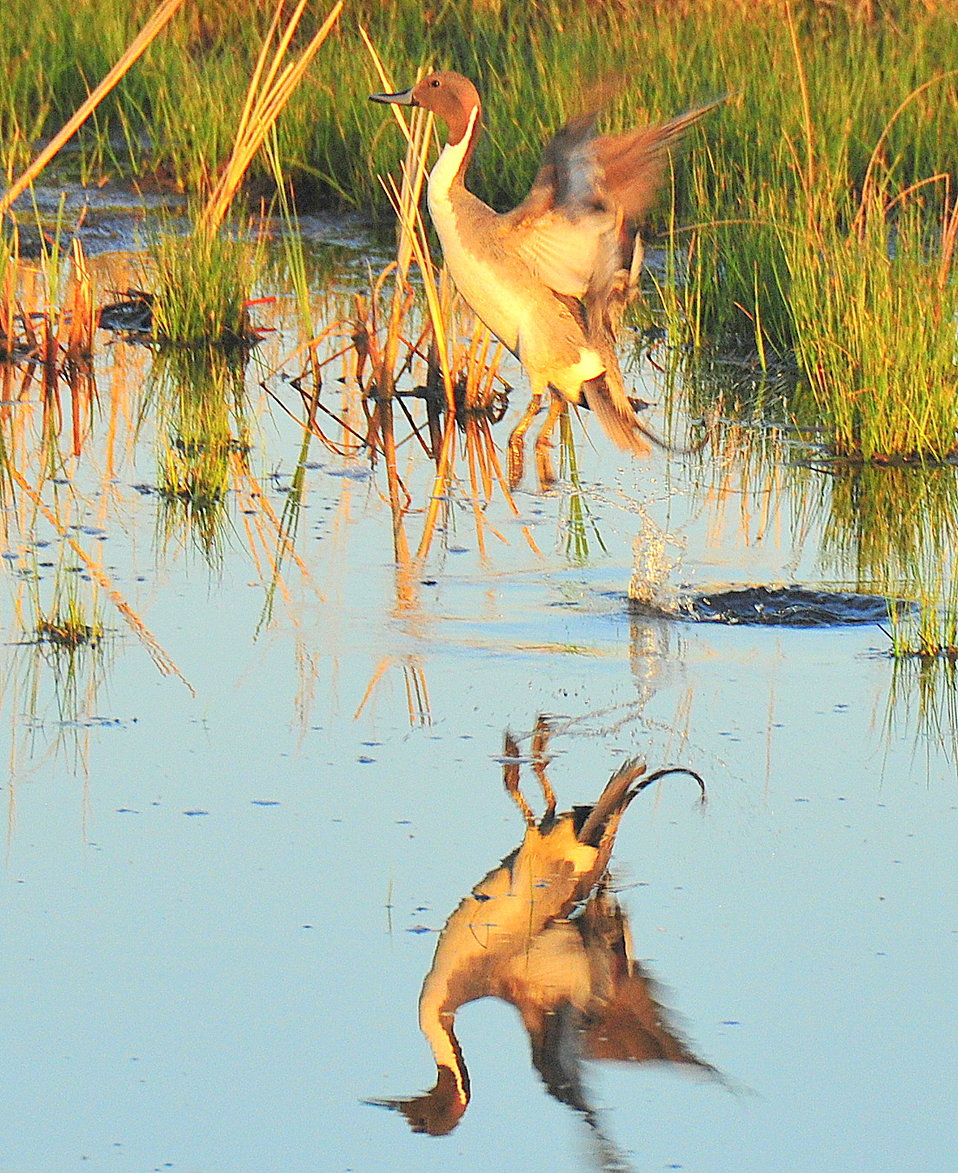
Pintail Drake Takes Flight

A pintail drake takes flight from a seasonal wetland in Sand Lake Wetland Management District.